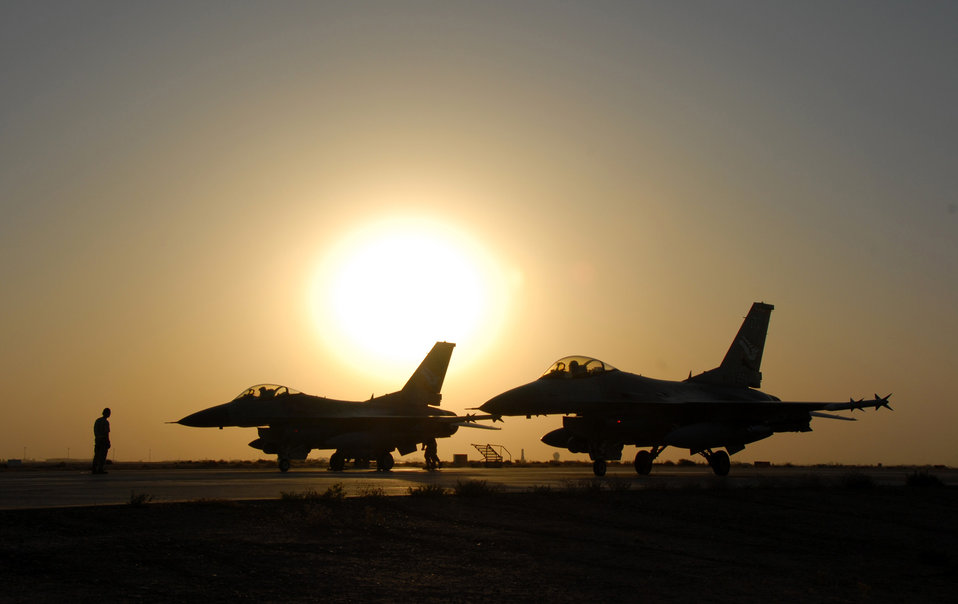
August 4 airpower summary: F-16s fly close-air-support missions

A pair of F-16 Fighting Falcons sit on the flightline as the sun sets at Balad Air Base Iraq. F-16s fly close-air-support missions exclusively for Operation Iraqi Freedom. F-16s destroyed dirt bridges being used by insurgents Aug. 4 in Baghdad.